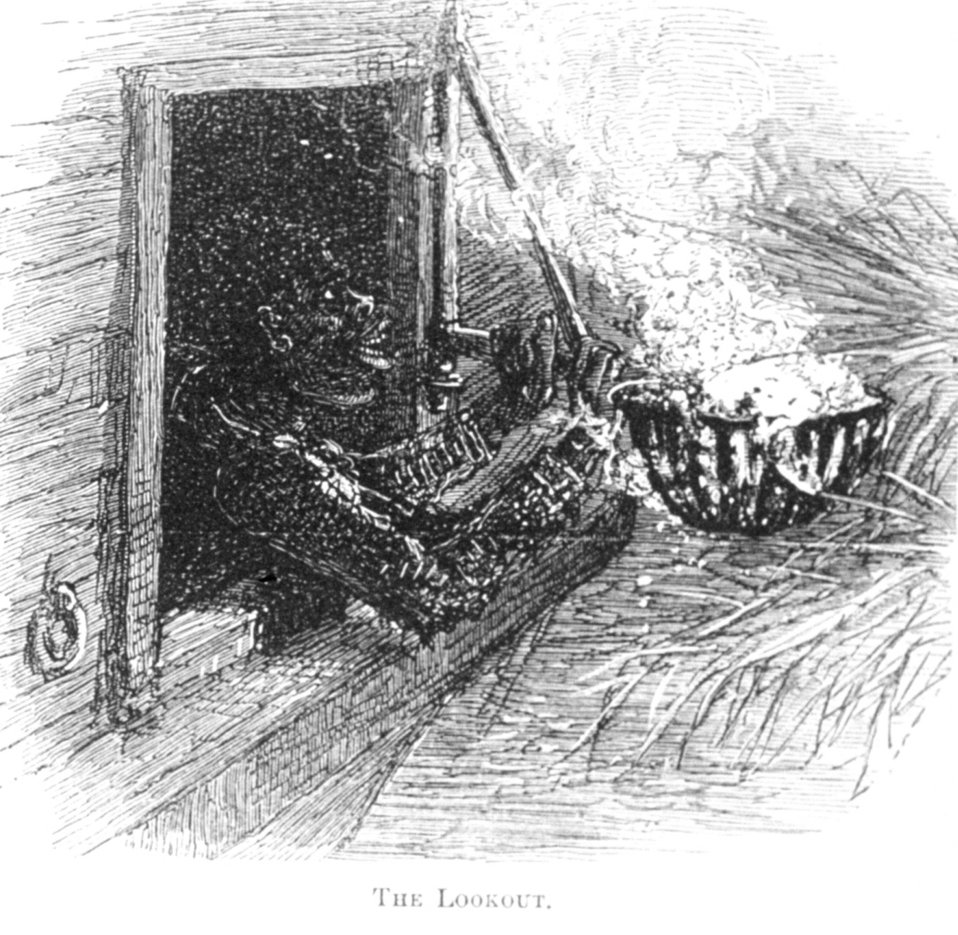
The Lookout - in 'Florida for Tourists, Invalids, and Settlers' by George M. Barbour, 1881. Library Call No. F316 .B23 1881. A scene along the Ocklawaha River in central Florida near Ocala.